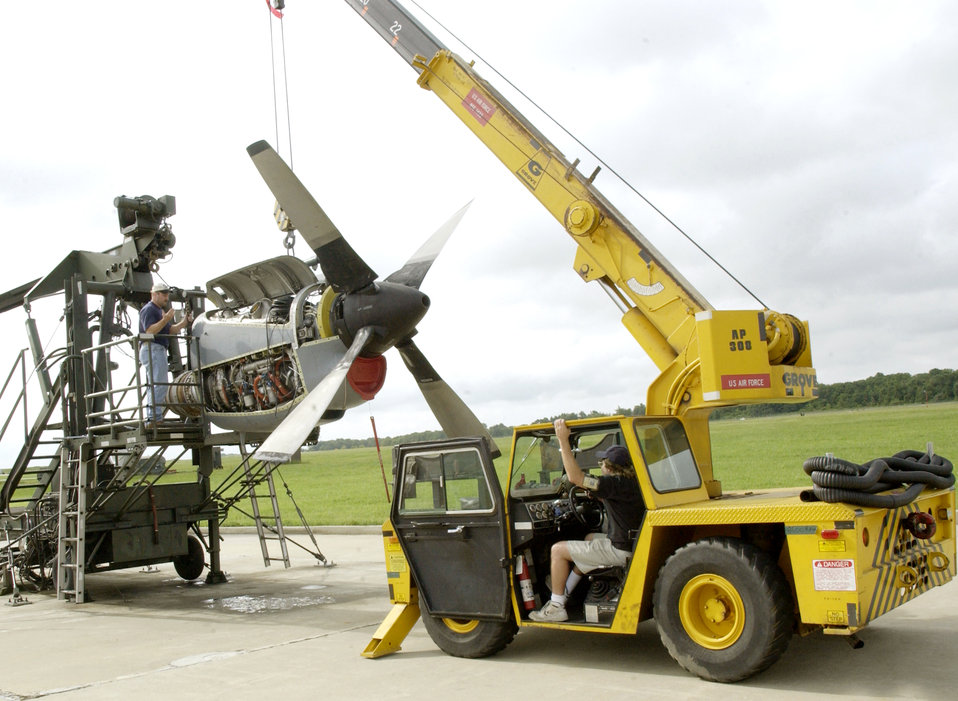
Battlelab demonstrates new propeller balancing system

MCGUIRE AIR FORCE BASE, N.J. -- Ron Petticoffer (on test stand) and Wayne Schadler mount a C-130 Hercules engine with a modified propeller on a test stand to perform the first operational checkout of the new in-flight propeller balancing system. The Air Mobility Battlelab here installed the new system on a C-130 assigned to the 913th Airlift Wing from Willow Grove Air Reserve Station, Pa. The men are technicians assigned to the 913th Maintenance Group.